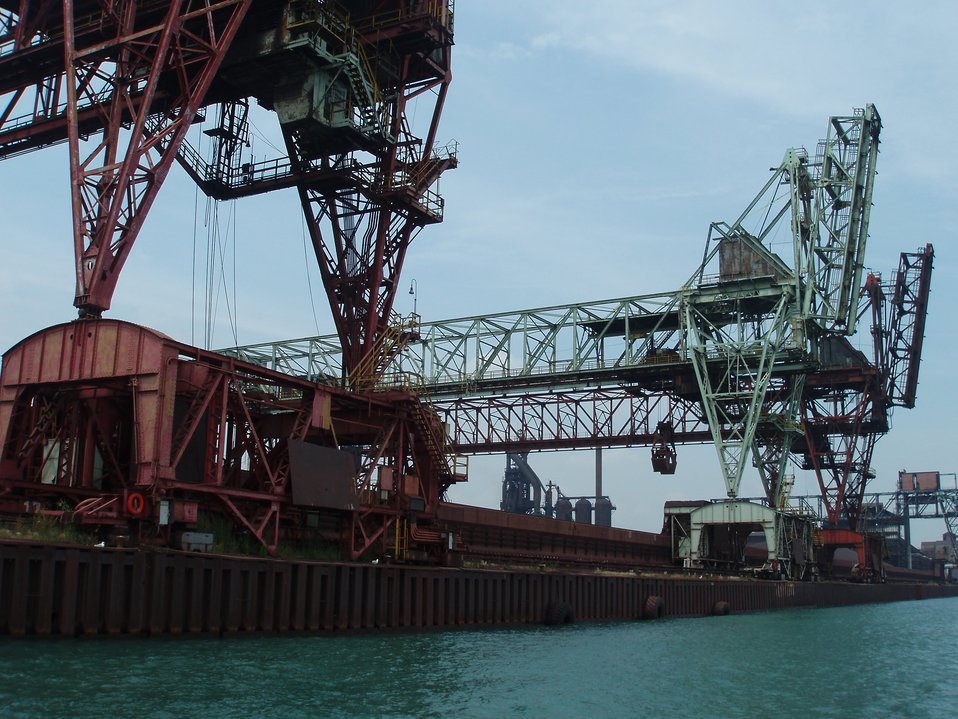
Industry along the Detroit River